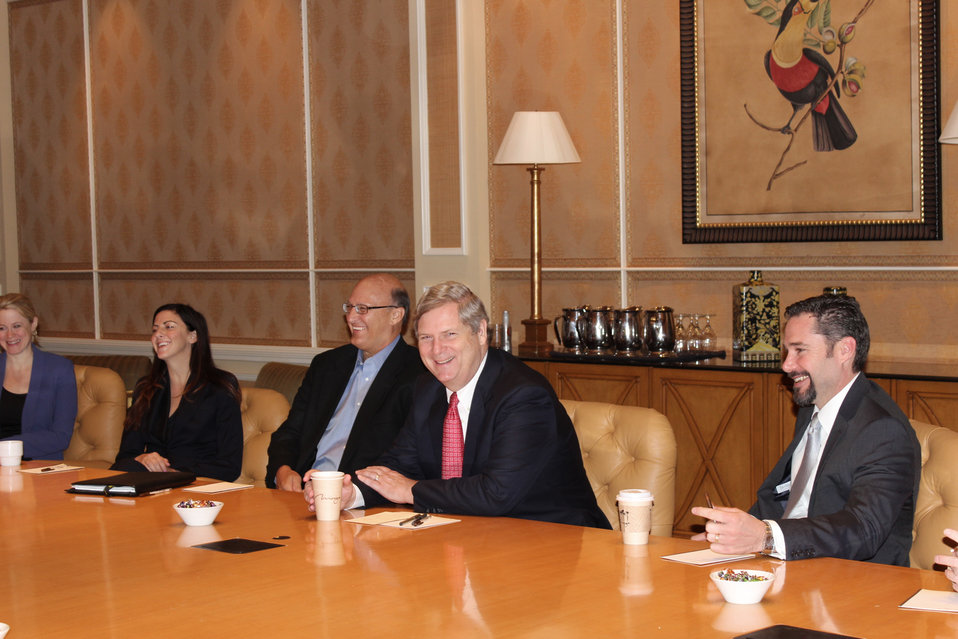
Agriculture Secretary Tom Vilsack meets with the National Biodiesel Board at the National Biodiesel Conference in Las Vegas, NV on Feb. 7, 2013. Secretary Vilsack discussed the unlimited opportunity for America to produce more homegrown energy through the development and innovation of advanced biofuels and the significant contributions biofuels and other biobased products have made to America’s economic and energy security, as well as the importance of supporting the industry through research, investment and increased collaboration.